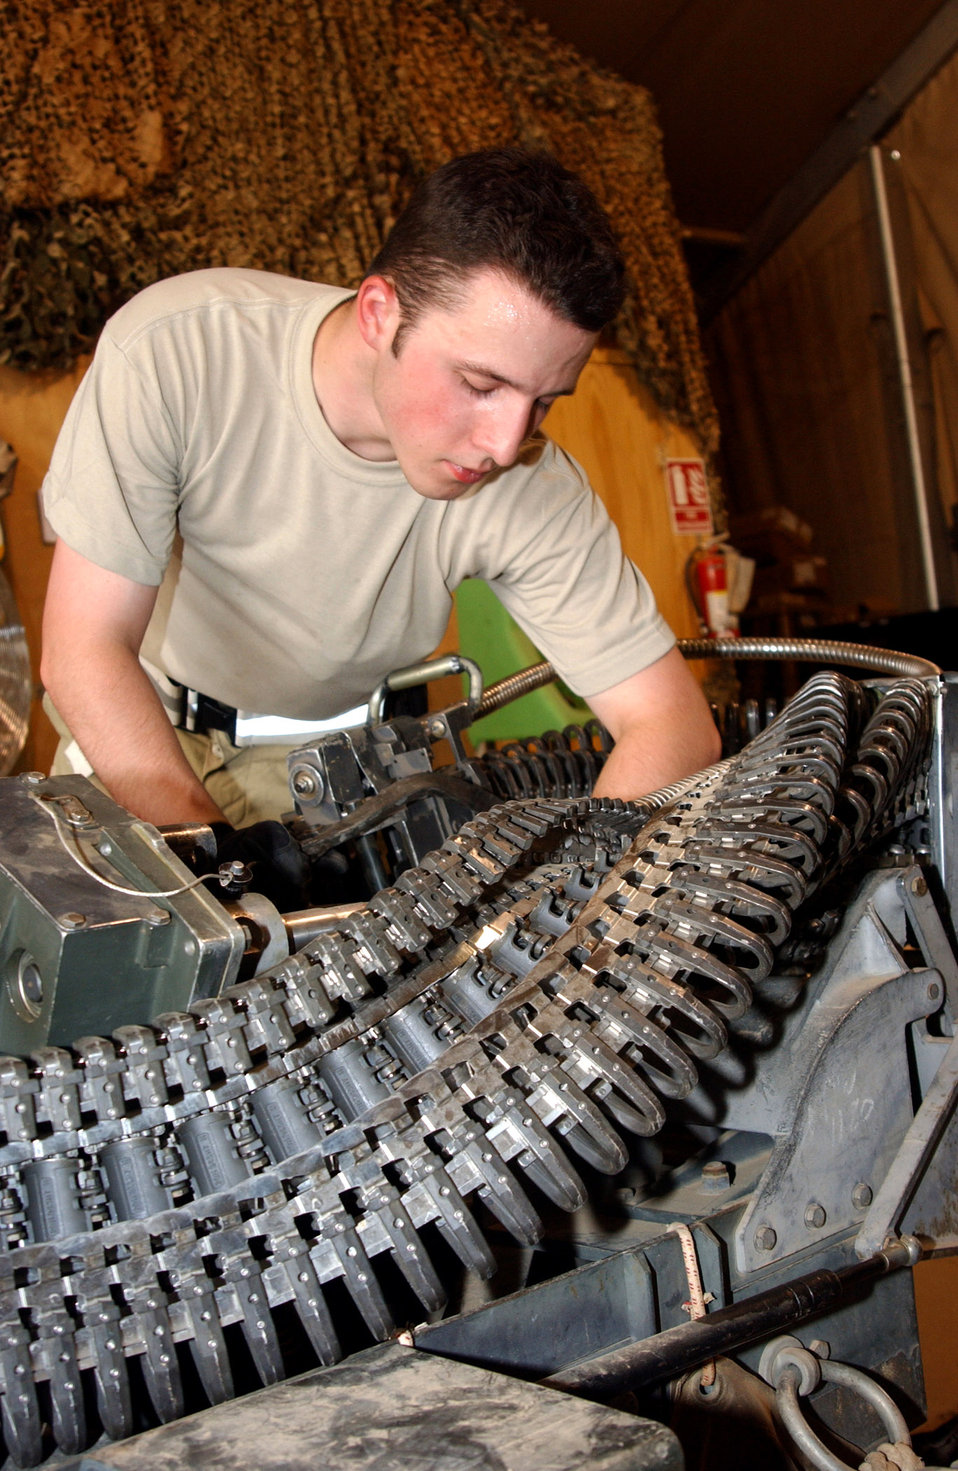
Security forces Airmen step outside the wire

Senior Airman Christian Carithers checks the fluid levels in a Humvee while preparing for another mission outside the wire with his police transition team in July at Contingency Operating Base Speicher, Iraq. Deployed from McGuire Air Force Base, N.J., Airman Carithers is assigned to the 732nd Expeditionary Security Forces Squadron Det. 1. Members of the police transition team check the vehicles thoroughly to ensure they will perform properly. The police transition team's goal is to help the Iraqis establish a functioning, independent police force.